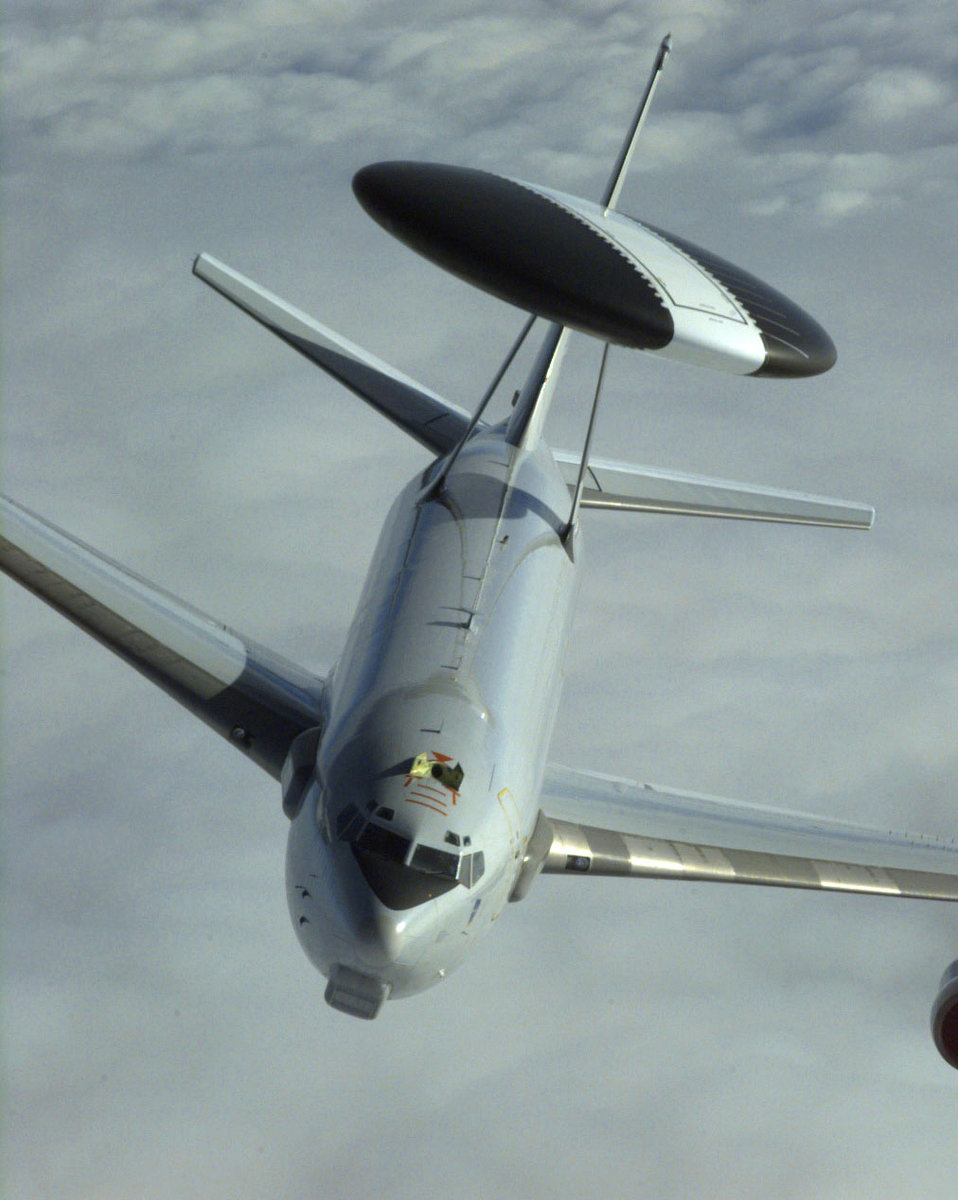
E-3 Sentry

FILE PHOTO -- The E-3 Sentry is a modified Boeing 707/320 commercial airframe with a rotating radar dome. The dome is 30 feet in diameter, 6 feet thick and is held 11 feet above the fuselage by two struts. It contains a radar subsystem that permits surveillance from the Earth's surface up into the stratosphere, over land or water. The radar has a range of more than 200 miles for low-flying targets and farther for aerospace vehicles flying at medium to high altitudes.